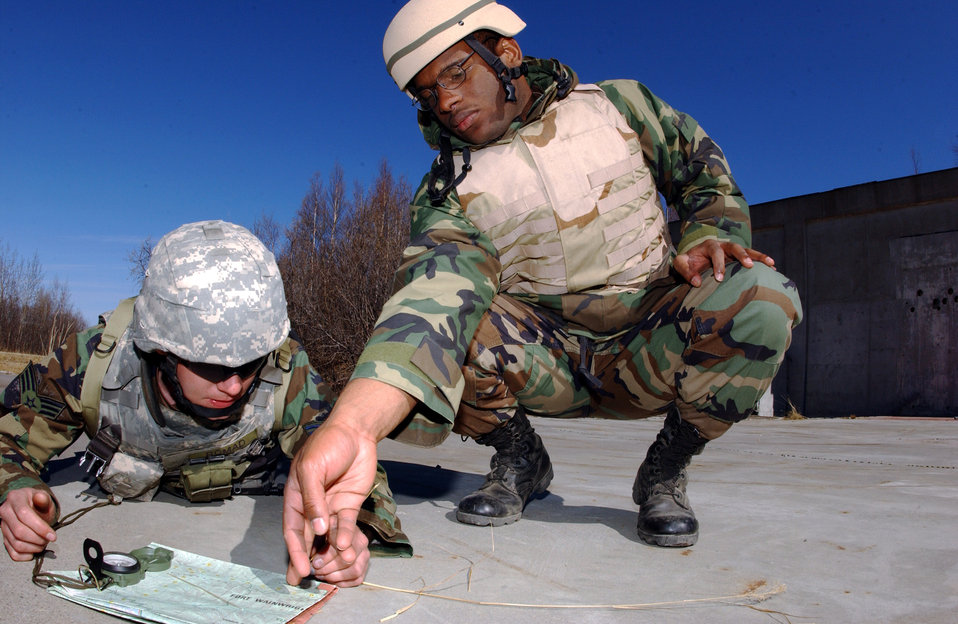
Practice makes perfect during Ursa Minor

Senior Airmen John Tranum and Reynold Black use a map and compass to identify a designated location May 16 during a land navigation exercise at Eielson Air Force Base, Alaska. The two 3rd Air Support Operations Squadron Airmen are participating in Operation Ursa Minor, a three-day field training exercise designed to provide hands-on combat training and experience to Airmen before they deploy to a combat area.